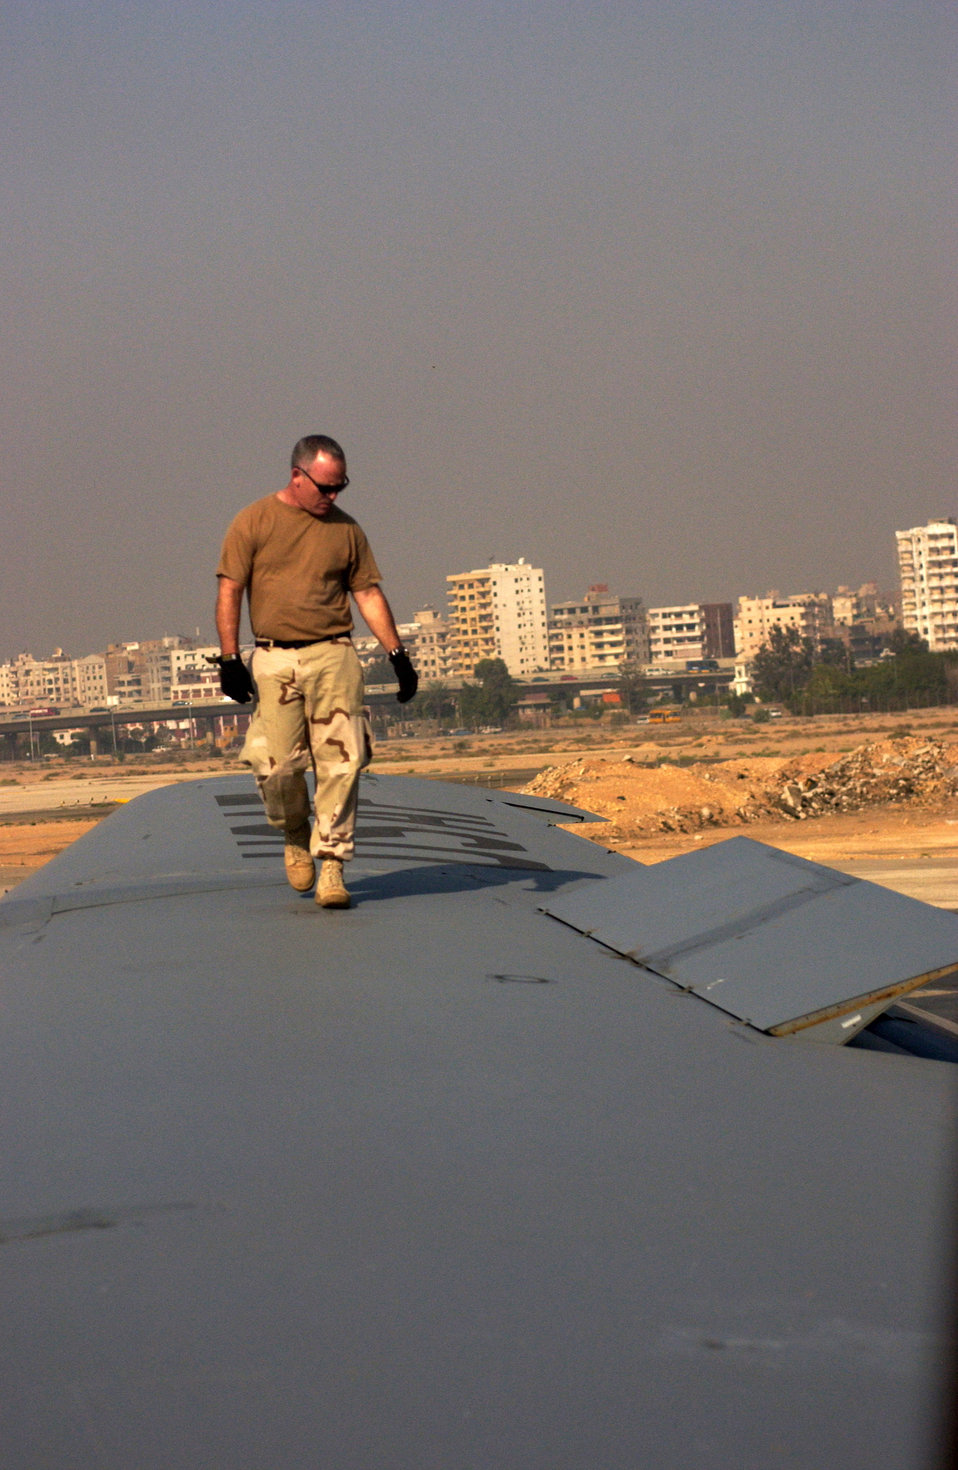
Reservists train with Egyptian airmen

Master Sgt. Rich Grainger inspects the wing of a KC-135 Stratotanker before takeoff at the Cairo airport in Egypt. A contingent of reservists from the 336th Air Refueling Squadron at March Air Reserve Base, Calif., are providing aerial refueling training for Egyptian pilots. Sergeant Grainger is a crew chief with the 752nd Aircraft Maintenance Squadron at March AFB.